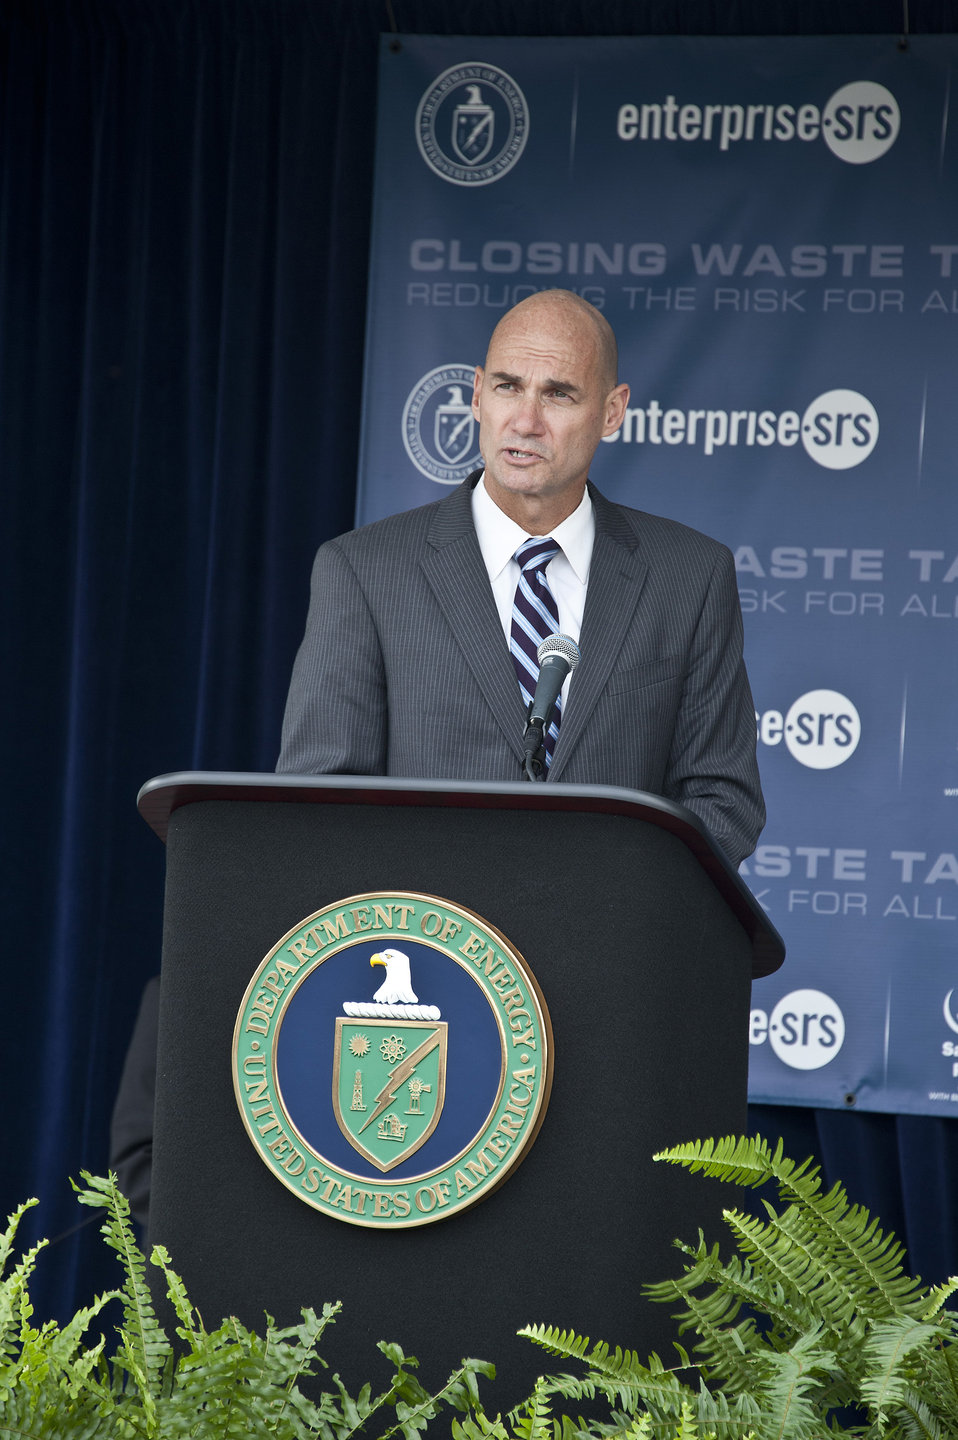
Thomas P. D’Agostino, Undersecretary for Nuclear Security and Administrator, NNSA speaking at the formal tank closure celebration in H Area